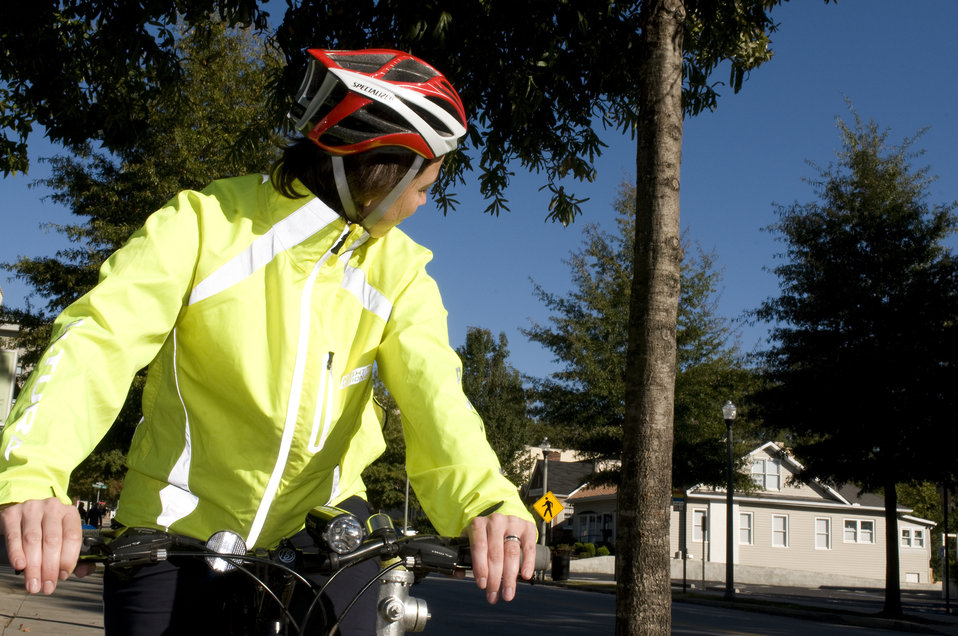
Photographed on a sunny Georgia day this female bicyclist was embarking on a morning bicycle ride. Note the brightly-colored windbreaker she was wearing, which would help drivers see her more easily, as well as the protective, aerodynamic helmet, and the snug leggings, all adding to an overall safer bike ride.